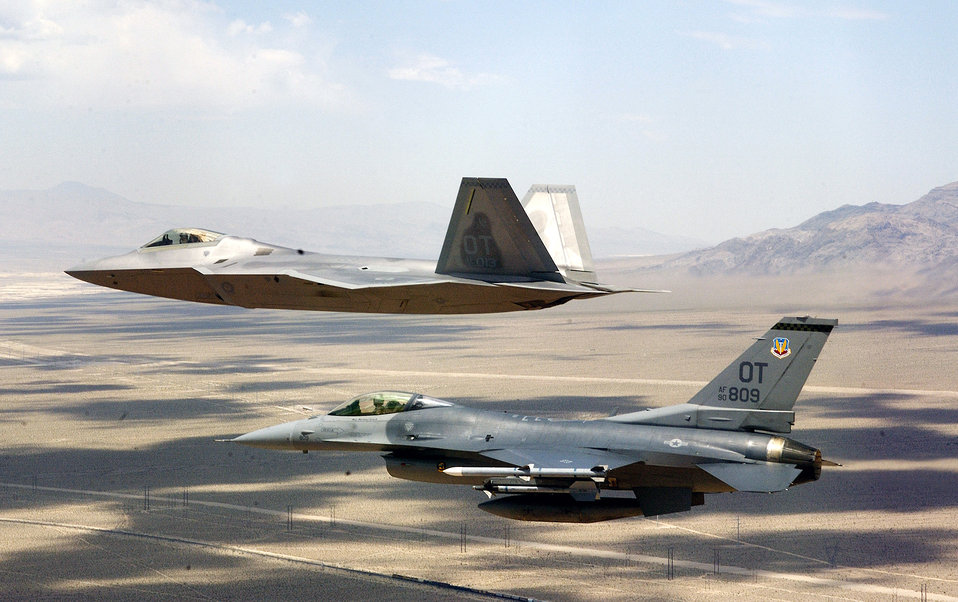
Formation flying

NELLIS AIR FORCE BASE, Nev. -- An F/A-22 Raptor flown by Maj. David Thole flies fingertip formation on a training mission June 23 alongside an F-16 Fighting Falcon flown by Maj. Alex Grynkewich. Major Thole is assigned to the 422nd Test and Evaluation Squadron, and Major Grynkewich is from the 53rd Test and Evaluation Group.